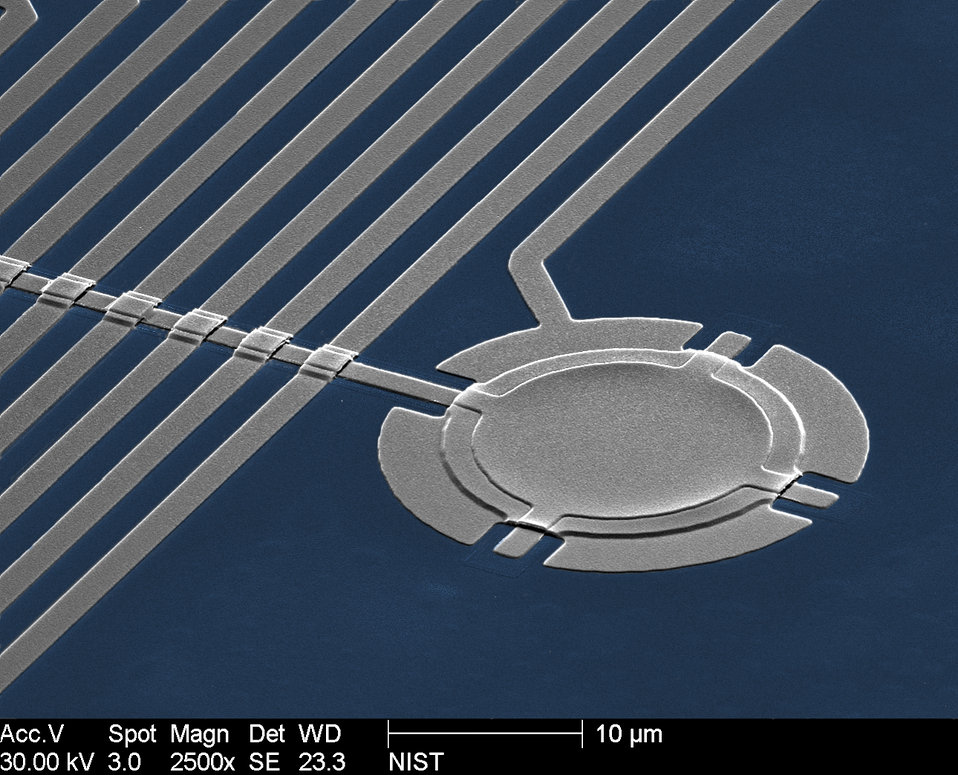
Aluminum Drum

Colorized micrograph of NIST's aluminum drum, which is 15 micrometers in diameter and 100 nanometers thick. The drum is used in quantum information experiments and ultraprecise measurements of mechanical motion.